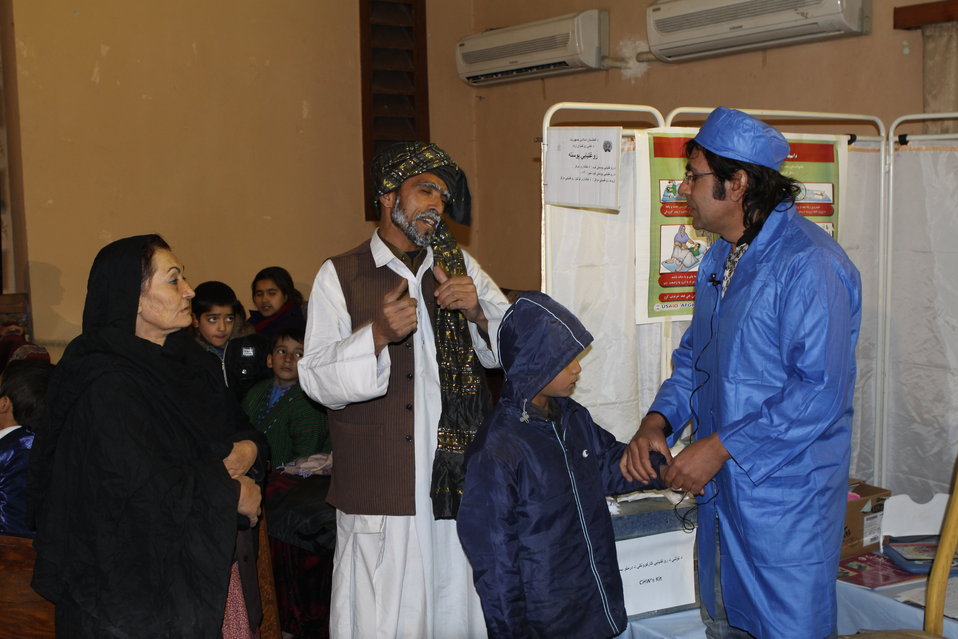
Community Health Workers Celebrated

Kabul, Afghanistan | December 5, 2010 — In support of the United Nations designated International Volunteer Day for Economic and Social Development, Afghanistan’s Ministry of Public Health celebrated its annual Community Health Worker Day today. Acting Minister of Public Health Dr. Suraya Dalil, USAID Senior Deputy Mission Director Robert Hellyer, other government officials, and international donors joined in recognizing the critical contribution of community health workers in Afghanistan and encouraging them to continue their voluntary support to their communities.
The event praised the contributions of the more than 22,000 volunteers throughout the country who deliver community level health-education, counseling, and services out of village health posts located in private homes. The Ministry of Public Health envisioned that community-based healthcare programs will actively encourage communities and families to adopt healthy lifestyles and behaviors, and provide families access to high quality and socially acceptable preventative medicine and life-saving services.
“We have 22,000 community health workers in Afghanistan that are able to implement the basic and standard medicines. They all have been trained through a job description,” said Minister Dalil. Addressing the health workers, she added, “I am proud and feel powerful that I have people like you.”
USAID-funded health projects collaborate closely with the Ministry of Public Health to improve the health and nutritional status of Afghans, provide quality primary healthcare, and promote healthy behaviors at the community and household-levels. USAID supported the training of more than 9,000 of the volunteer community health workers currently working in Afghanistan.
“On behalf of the American people, I congratulate the Community Health Workers for their diligence to gain the skills and knowledge necessary to serve their communities in this important role,” said USAID Senior Deputy Mission Director Hellyer. “USAID strongly supports community based health care and believes that quality community-based health services are essential to reaching Afghanistan’s Millennium Development Goals.”
To support the Basic Package of Health Services, USAID assisted in developing the community health worker training manual, helped train community health worker supervisors and master-trainers, facilitated in-service training, and produced and developed reporting tools, job aids, and education materials.